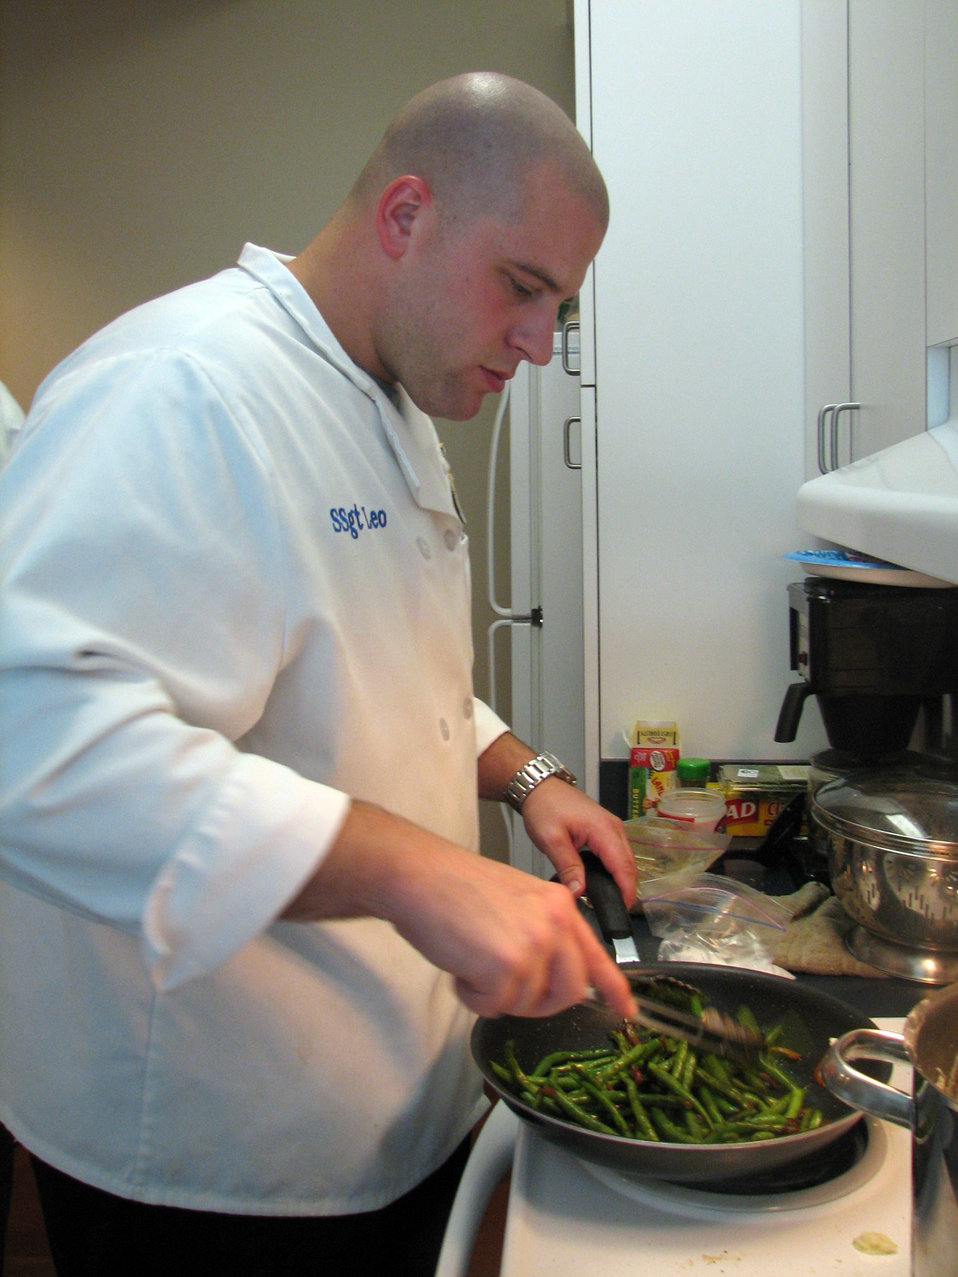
Airmen bring joy through cooking at Center for the Intrepid

Staff Sgt. Michael Leo prepares a meal for Airmen at the Center for the Intrepid June 24 in San Antonio. Sergeant Leo is an enlisted aide to the Air Education and Training Command vice commander. He volunteered to support sevicemembers in treatment at the Center for the Intrepid.